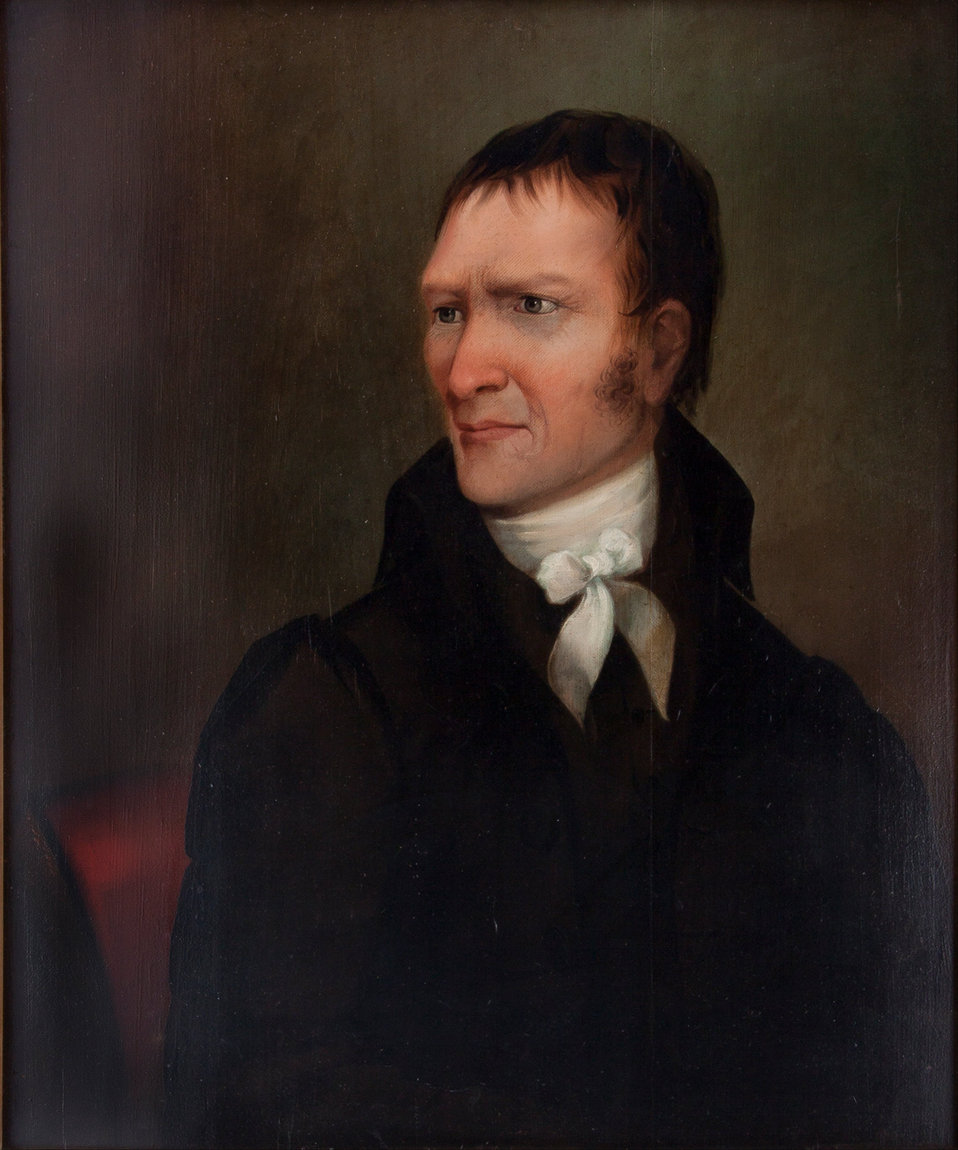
Benjamin Mason - Google Art Project